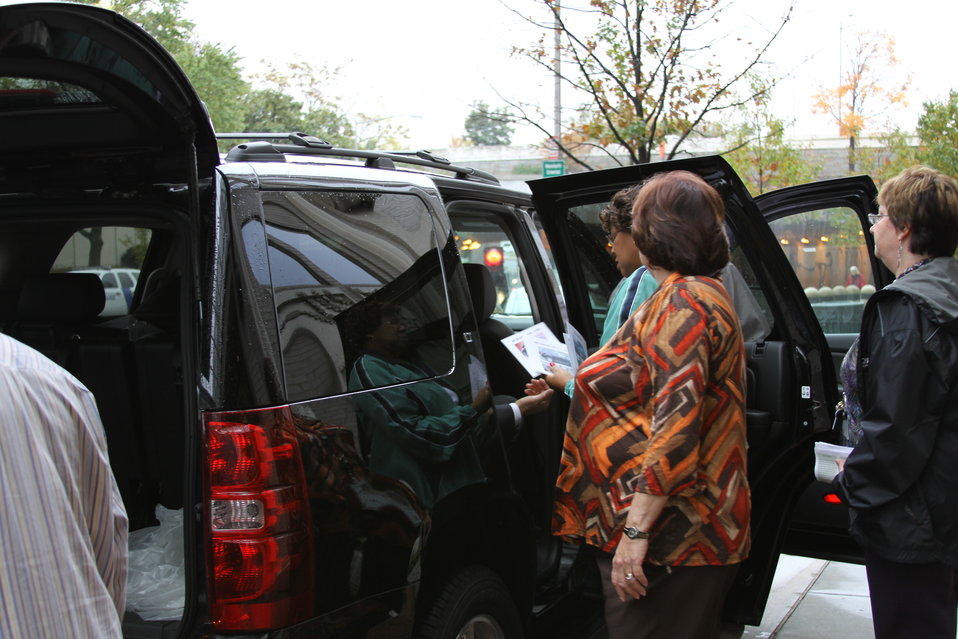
FCC Official Vehicle Tour